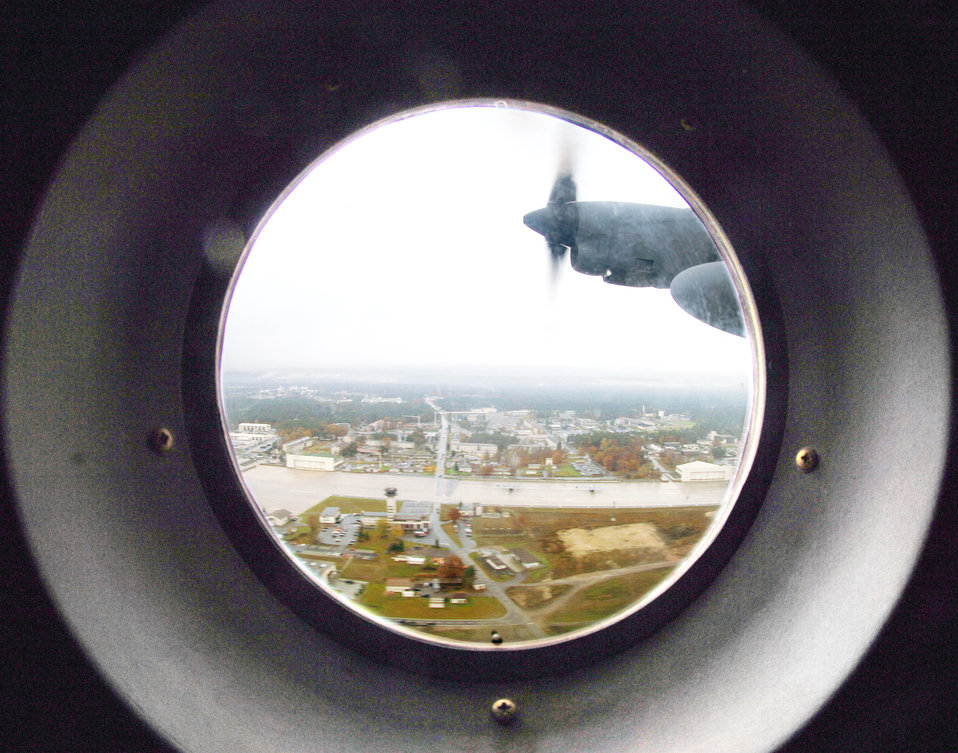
So long, Ramstein

After its official departure Nov. 2, 2009, from Ramstein Air Base, Germany, the last C-130E Hercules Tail No. 1299 heads east toward Poland where the 38-year-old aircraft will begin service for the Polish air force. The C-130 will be based at Powidz Air Base as part of a partnership program between the U. S. and Poland.